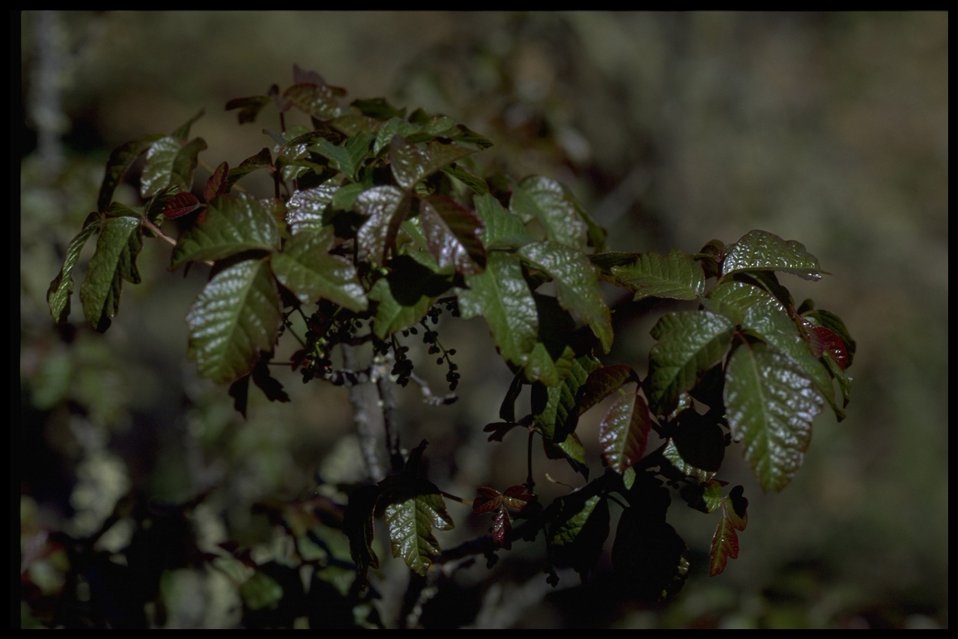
Medium shot of Toxicodendron diversilobum.